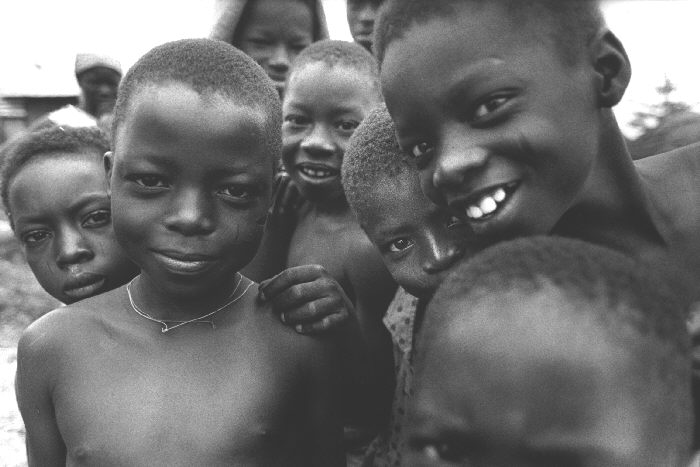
Children in northern Ghana.